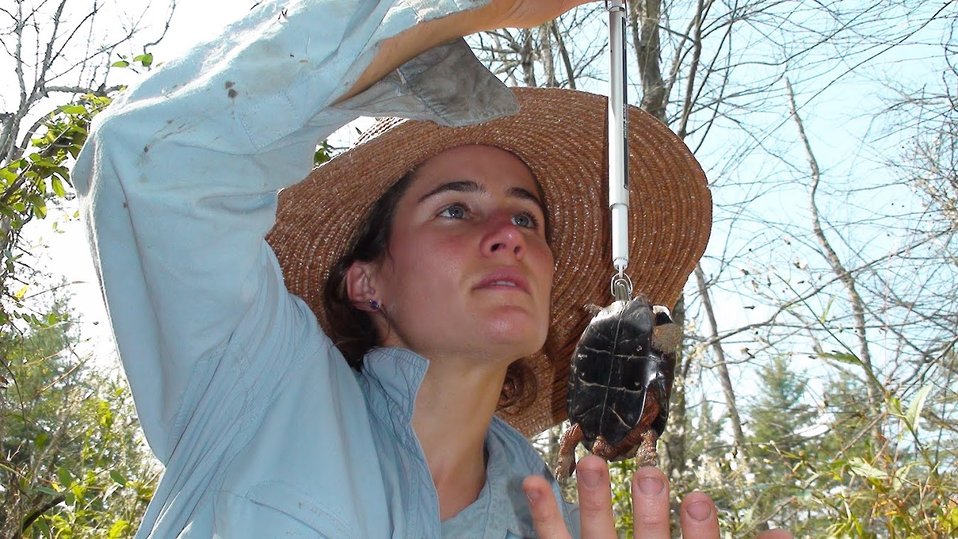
Bog turtle

Scientific name: Clemmys muhlenbergii
Status: Threatened and similarity of appearance

Weighing a bog turtle.